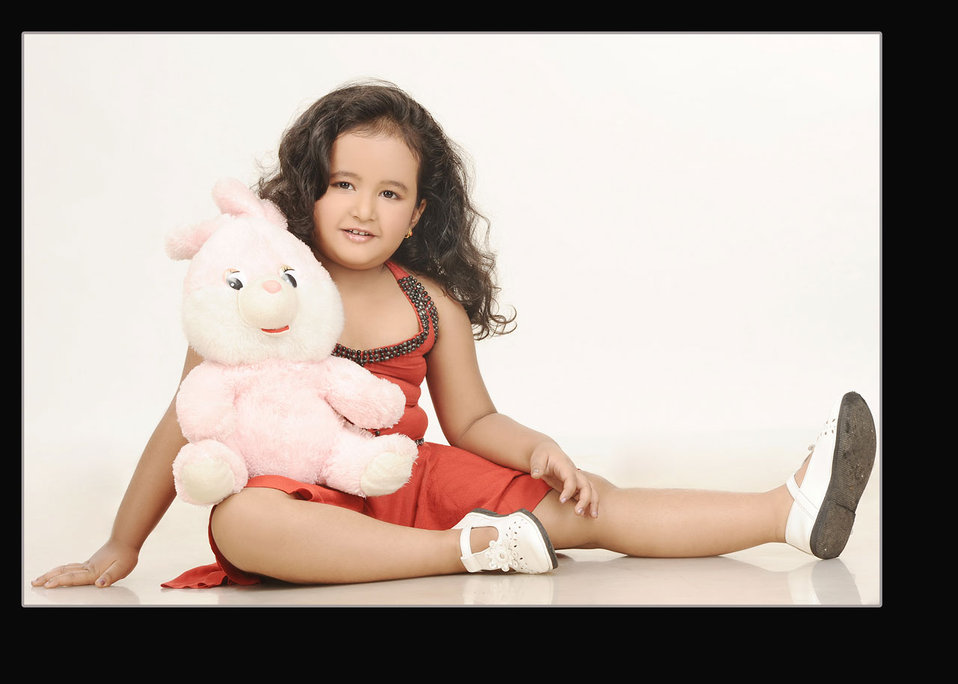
Dona roy tariang. dona is a jolly girl from guwahati. born to a jaintia mother and bengali father, dona is a little jolly girl..